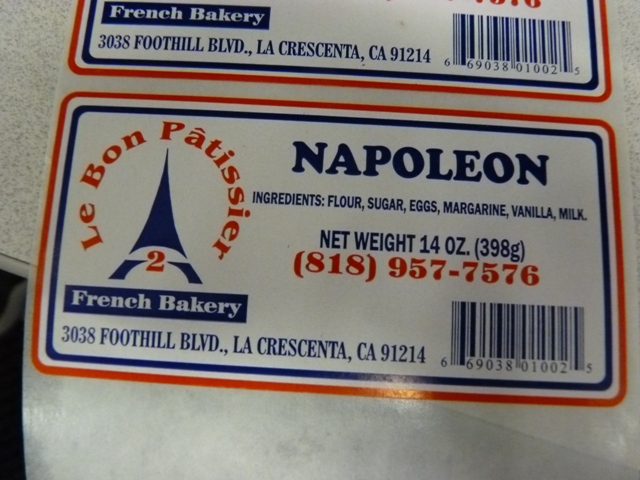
RECALLED - Pastry Products

April 5, 2011 – Product Recall – Le Bon Patissiere-2, Inc. Announces Voluntary Recall On Select Le Bon Patissiere Products That Contain Undeclared Allergens.